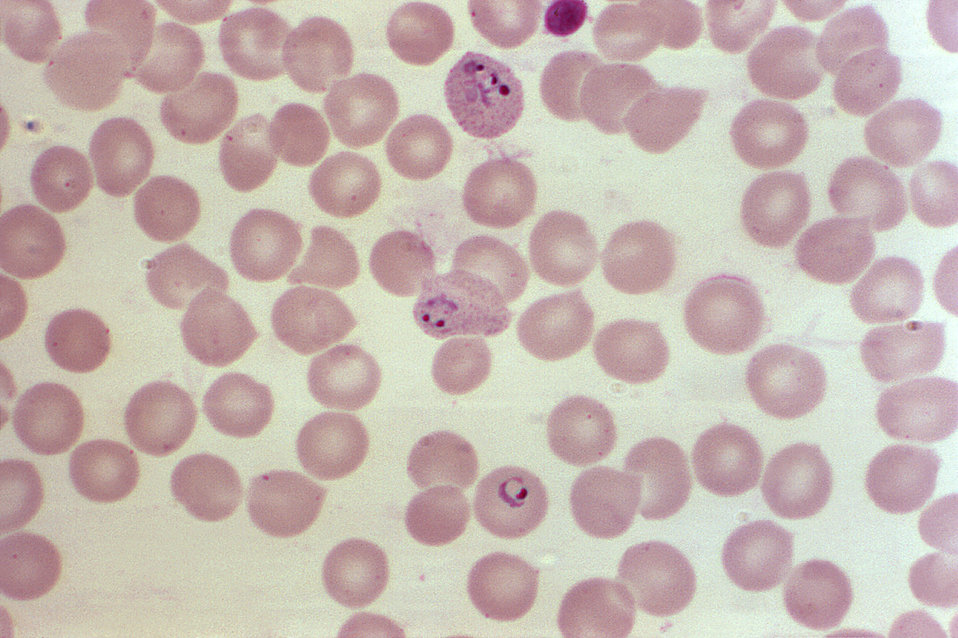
Magnified 1000X., this blood smear photomicrograph revealed erythrocytes containing developing Plasmodium vivax parasites.